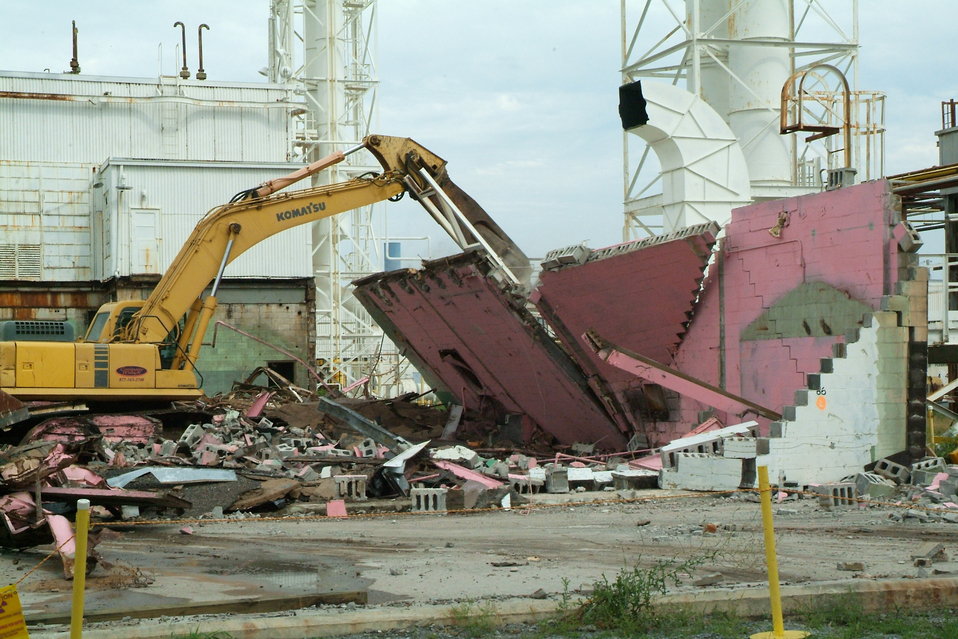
Paducah demolition - Recovery Act

A section of the Feed Plant is demolished.